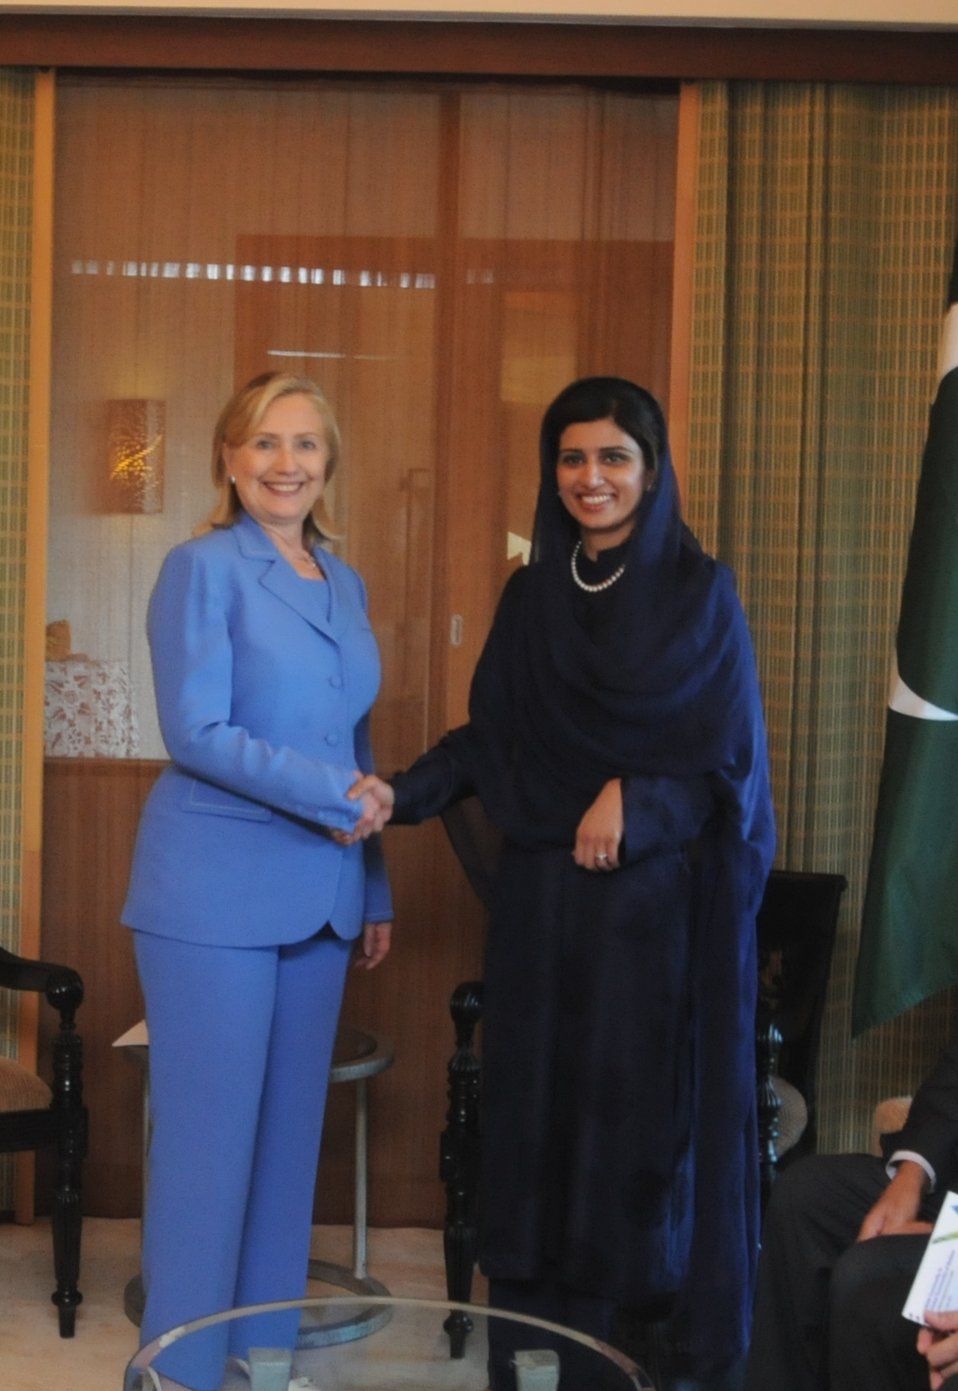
Secretary Clinton Meets With Pakistani Foreign Minister Rabbani Khar

U.S. Secretary of State Hillary Rodham Clinton, left, meets with Pakistani Foreign Minister Hina Rabbani Khar, right, for a bilateral meeting in Bali, Indonesia, on July 23, 2011.